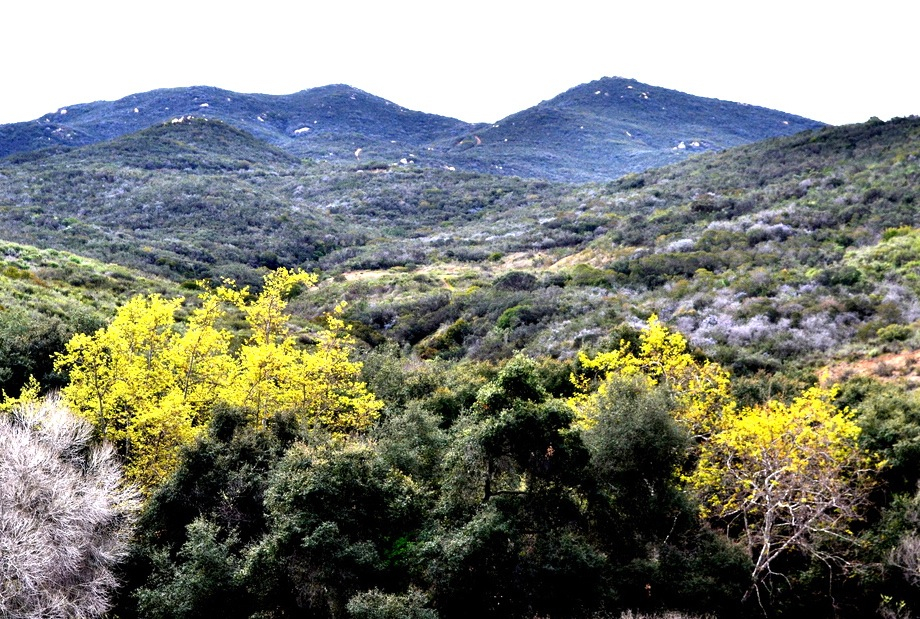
coastal sage scrub

San Diego National Wlldlife Refuge, CA